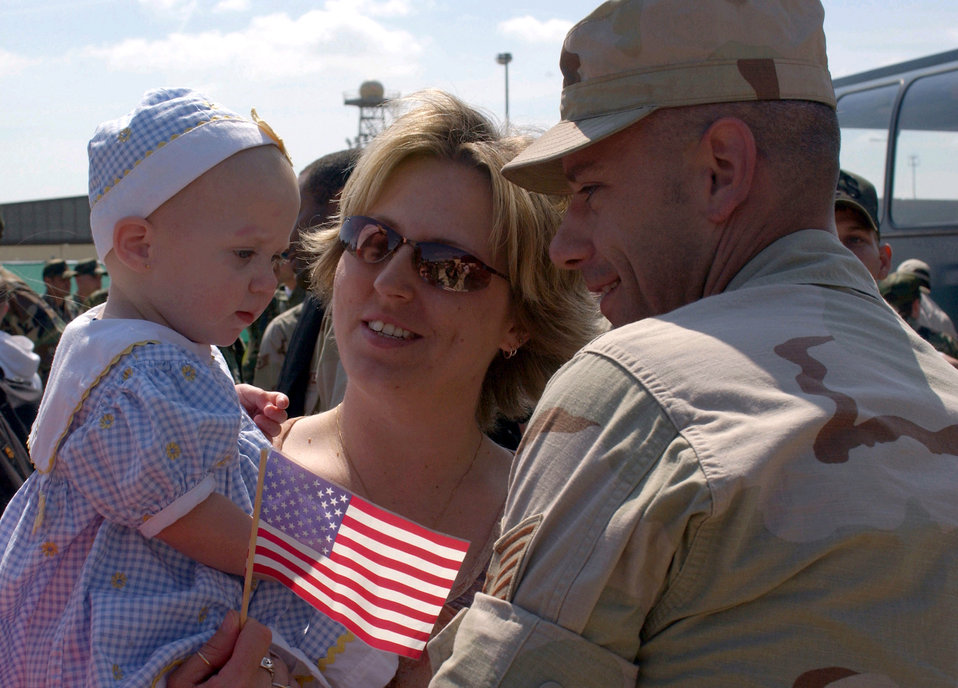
Happy homecoming

SPANGDAHLEM AIR BASE, Germany -- Tech. Sgt. Michael Kiley is welcomed home by his wife, Tracey, and daughter, Kristen. Sergeant Kiley and more than 100 Airmen from the 52nd Civil Engineer Squadron returned here from Iraq on June 17. They supported Operation Iraqi Freedom since March.